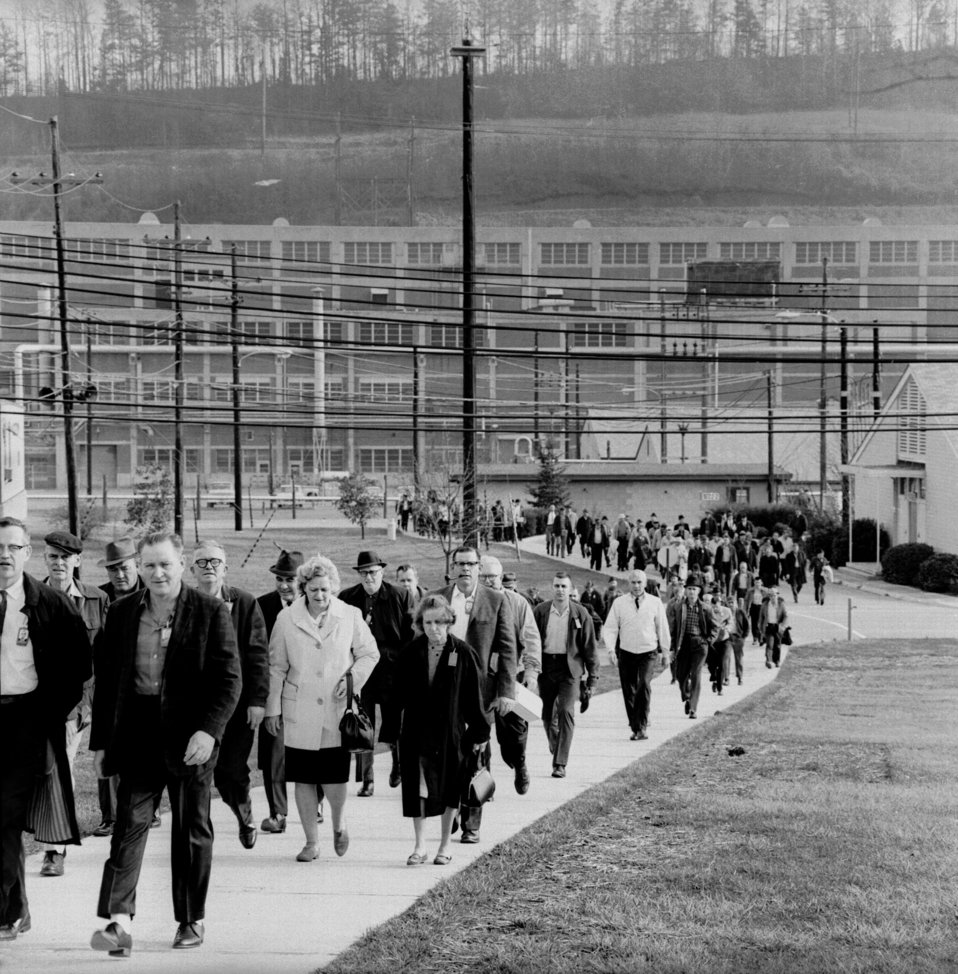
Shift change at Y-12 Oak Ridge

66-0022 DOE photo by Ed Westcott

Shift change at Y-12 Oak Ridge Tennessee 2-14-1966